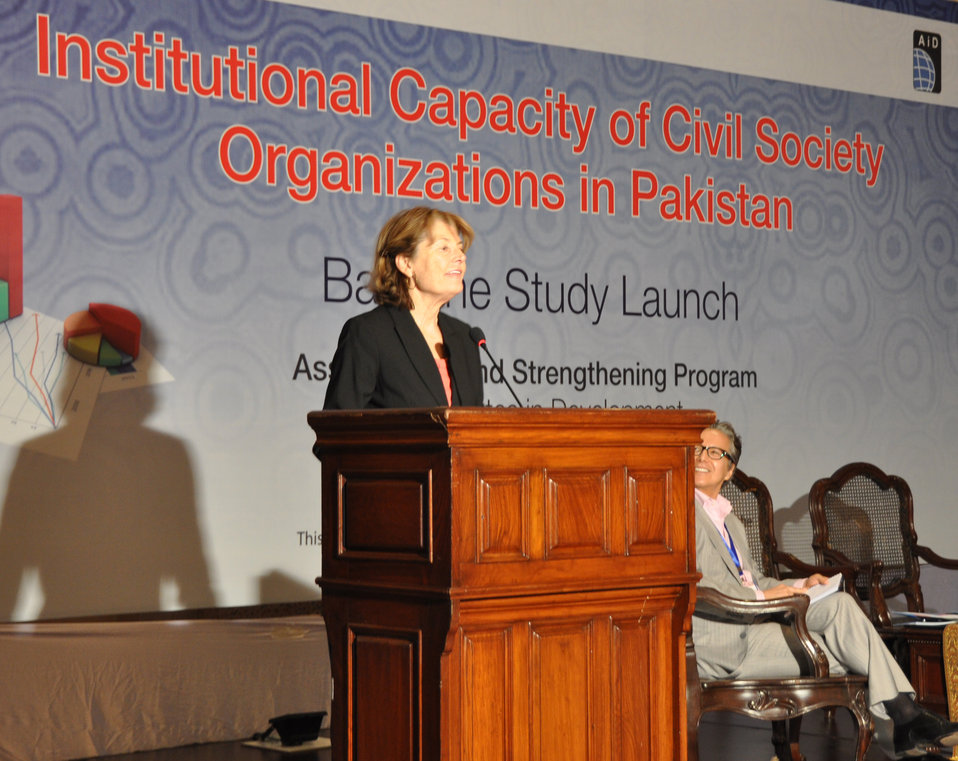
Institutional Capacity of Civil Society Organizations in Pakistan - Baseline Study Launch